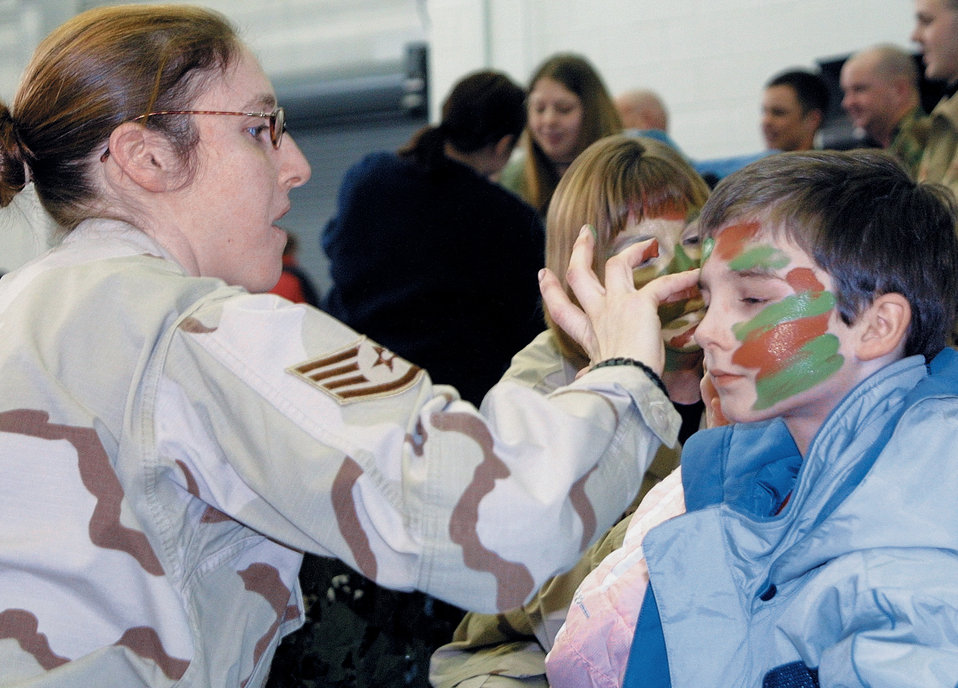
Child's play

POPE AIR FORCE BASE, N.C. -- Staff Sgt. Danielle Pelleter applies camouflage to Evan Colley during Operation Little Gryphon here Jan. 28. Families walked through the many steps and aspects of a deployment to experience what deployment means for active-duty parents. The children also learned self-aid buddy care from the American Red Cross and learned what chaplains do while deployed. Sergeant Pelleter is assigned to the 43rd Security Forces Squadron, and Evan is the son of 2nd Lt. Geoff Colley of 43rd Communications Squadron.